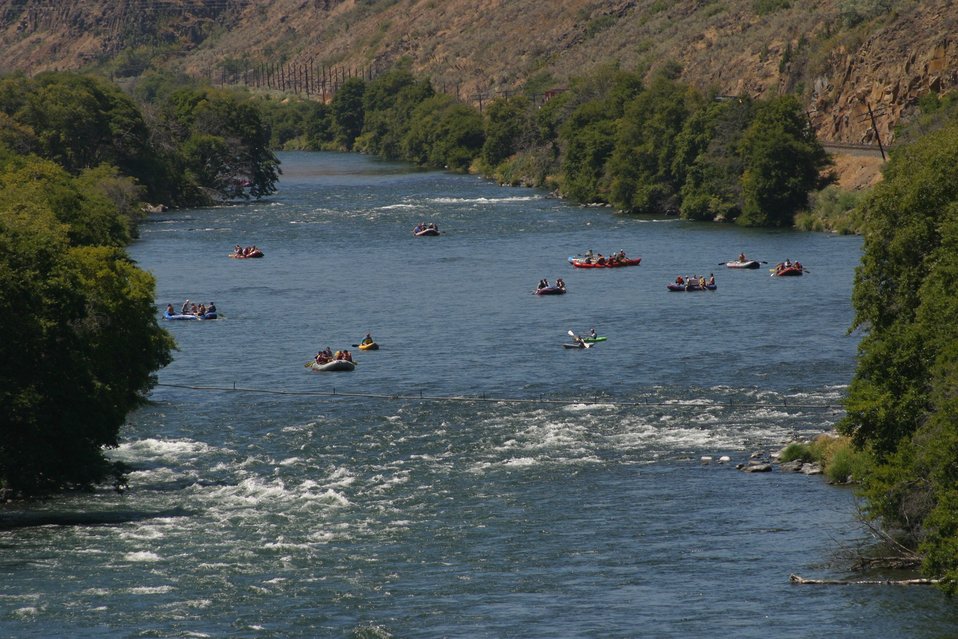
View from the Maupin Bridge looking up stream of the Lower Deschures River.